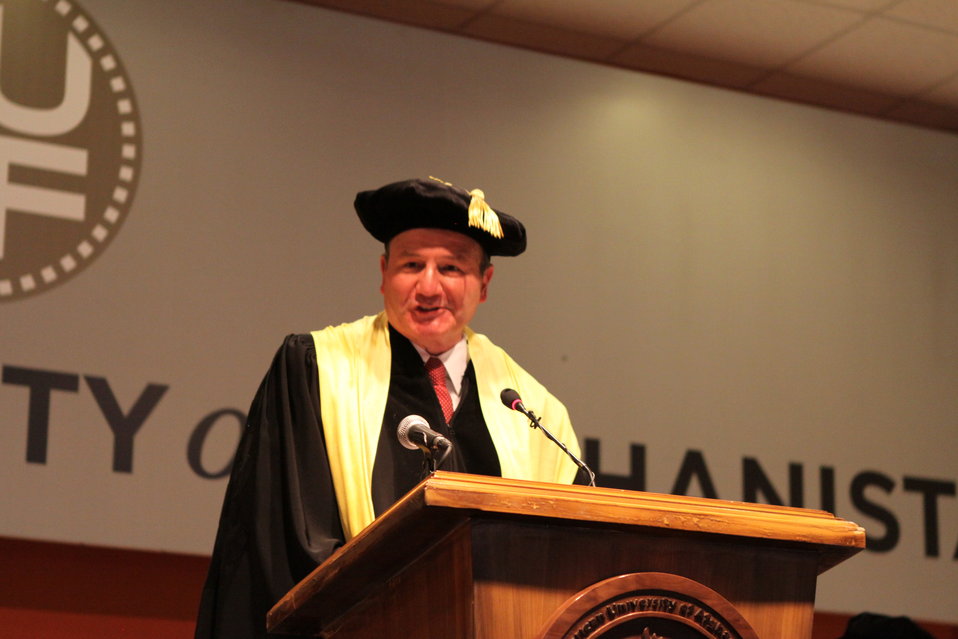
100526 AUAF Graduation 199